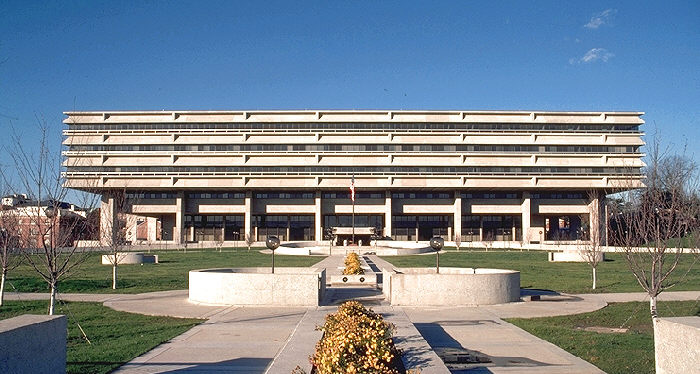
Newly built hospital at Walter Reed Army Medical Center, Washington, DC.